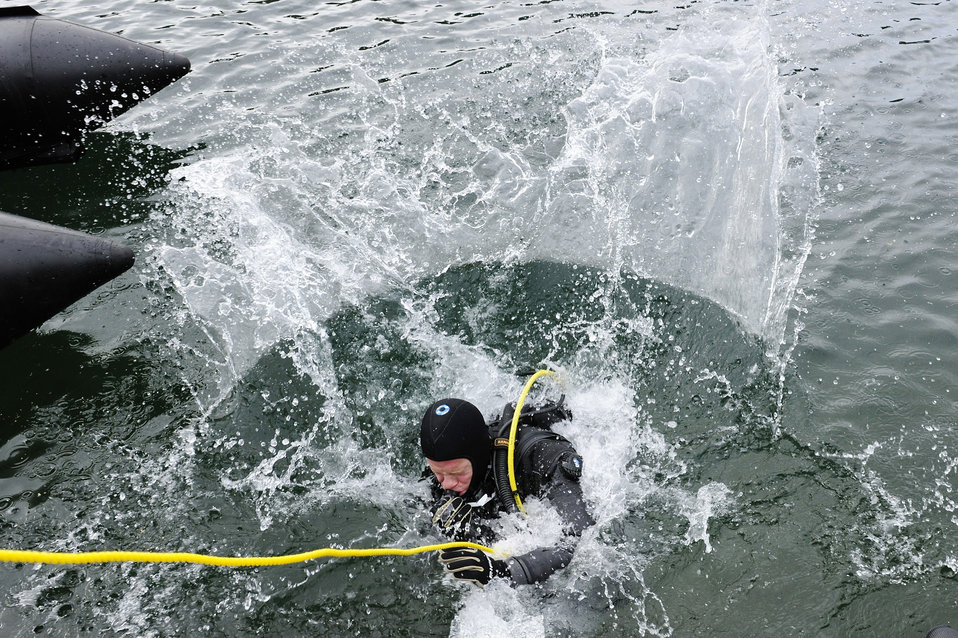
Pararescuemen train to save lives

Senior Airman Nathan Simonson, 56th Rescue Squadron pararescueman, enters the water in preparation to conduct subsurface search patterns during rescue dive training Oct. 5, 2010, at Stoney Cove, England. The yellow rope was used between the diver and his wingman on land to relay line pull signals.